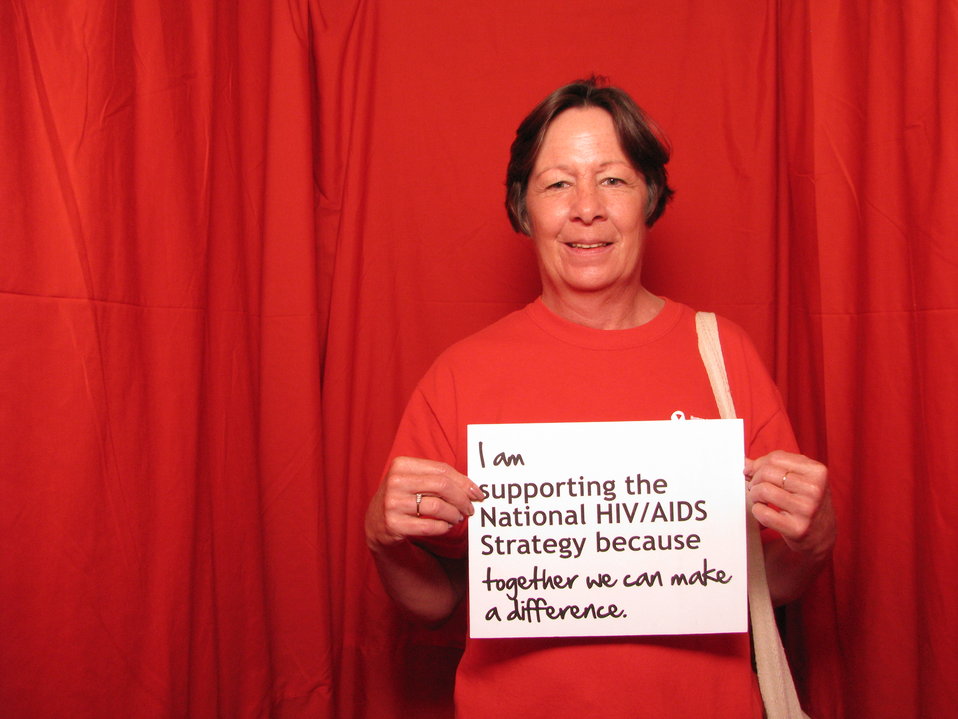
I am Supporting the National HIV/AIDS Strategy because together We Can Make a Difference

From the AIDS.gov photo booth at the U.S. Conference on AIDS, September 2010 (Orlando, FL).